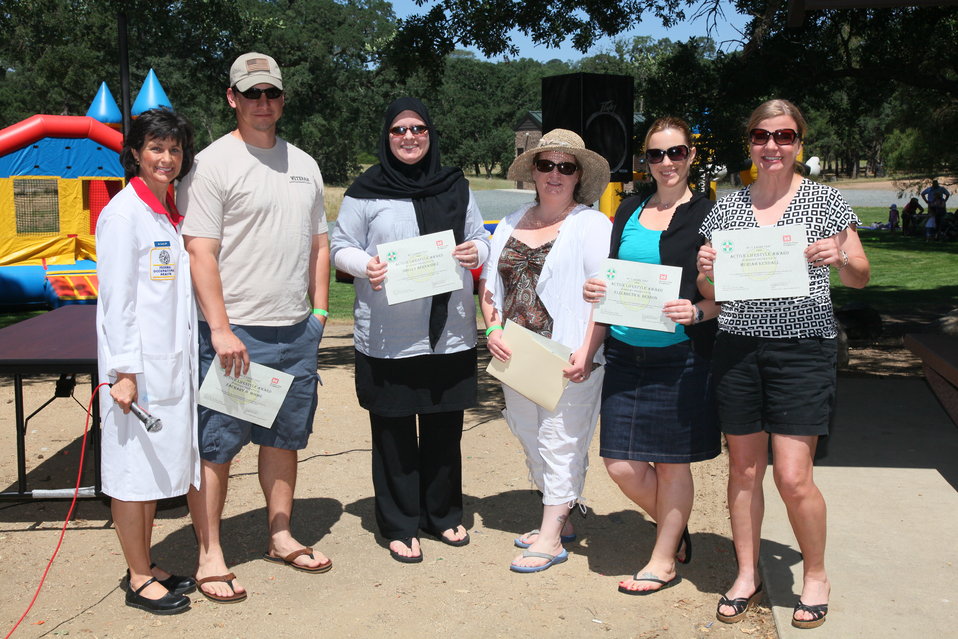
2011 Annual Picnic